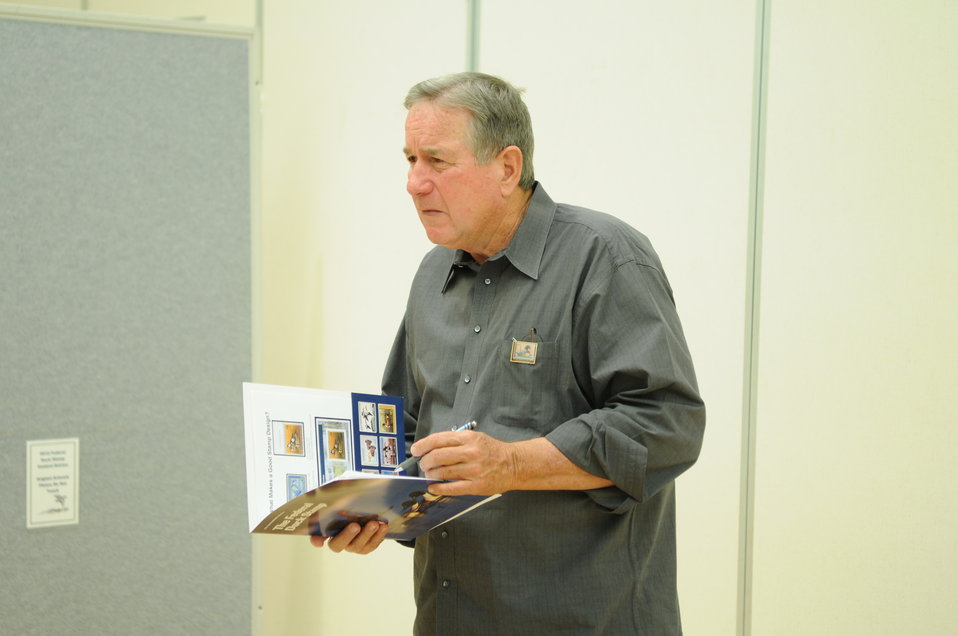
Judging

The U.S. Fish & Wildlife Service sponsored the 2012 Federal Duck Stamp Art Contest September 28 and 29 in Ogden, Utah, at Weber State University. A panel of five judges was responsible for choosing the art work used to design the 2013-2014 Migratory Bird Hunting and Conservation Stamp.